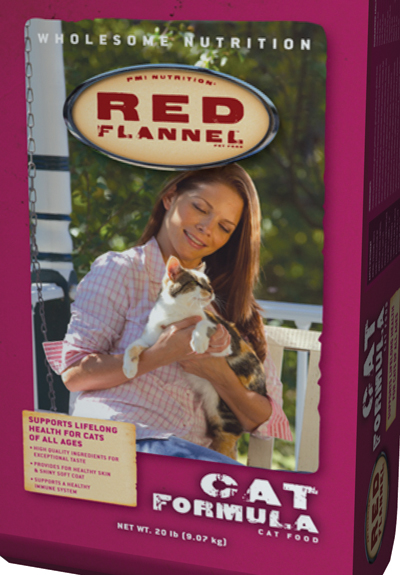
RECALLED – Cat Food

January 25, 2014 – Product Recall – PMI Nutrition, LLC Recalls Red Flannel® Cat Food Due to Possible Salmonella Contamination.